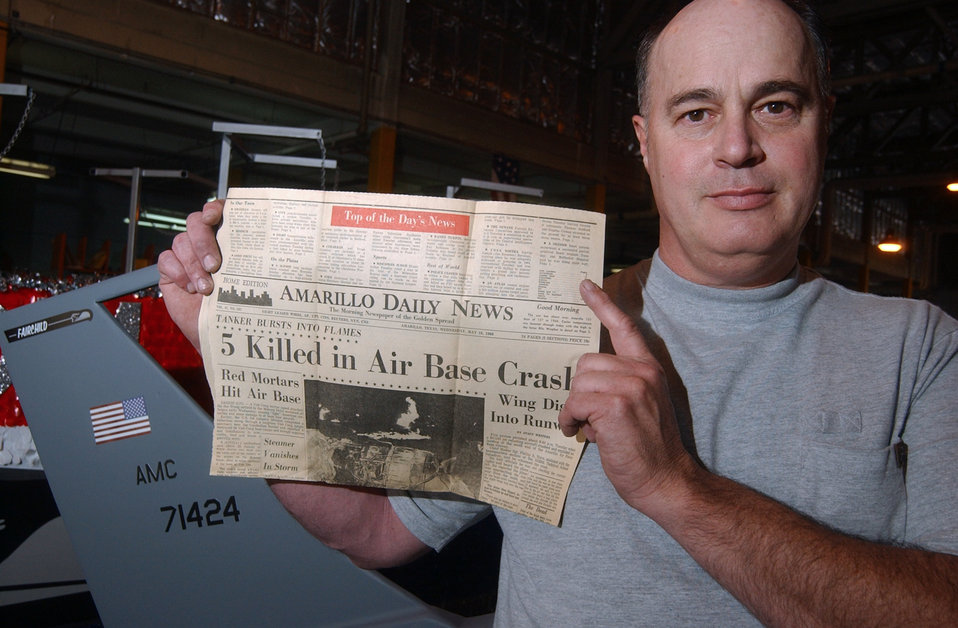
A father remembered

FAIRCHILD AIR FORCE BASE, Wash. -- Michael Doughty lost his father in a KC-135 Stratotanker accident May 16, 1966. Recently, Mr. Doughty worked for a solid month to refurbish a tanker replicate that has been dedicated to his father and will be used on a local parade's float. He is assigned to the 92nd Aircraft Structure Maintenance Flight here.